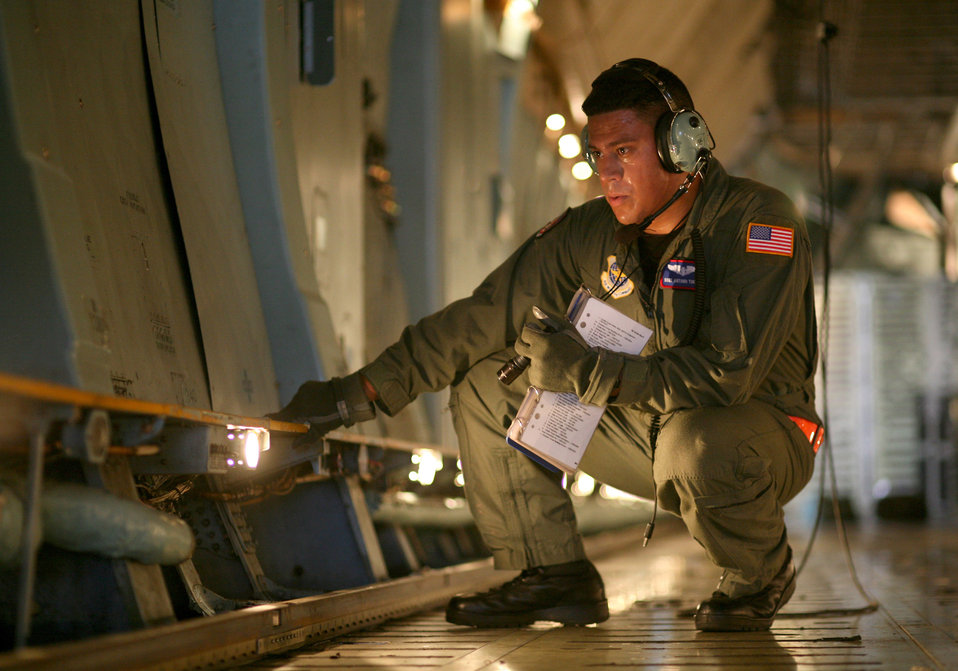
All secure

Staff Sgt. Antonio Torres performs a preflight check of a C-5 Galaxy before take-off Aug. 21 at Lackland Air Force Base, Texas. He is a flight engineer student with the Air Force Reserve's 433rd Airlift Wing at Lackland AFB.